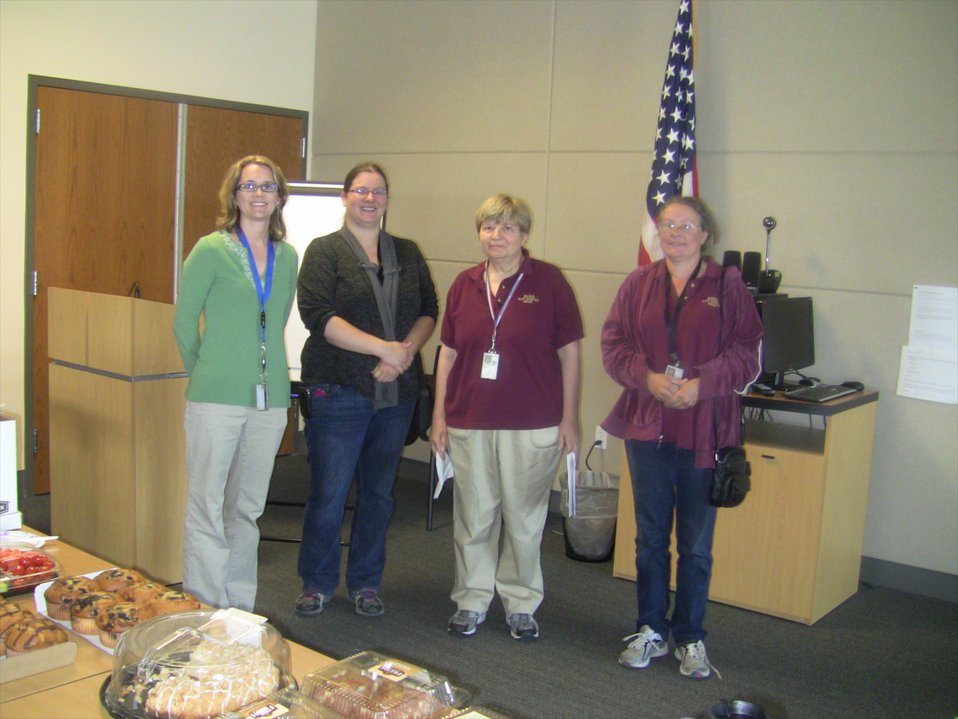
Safety Committee members Marene Baker, Samantha Wade, Kathleen Arntz, and Laura Rodgers during safety week; Location: National Archives at Denver, Broomfield, CO